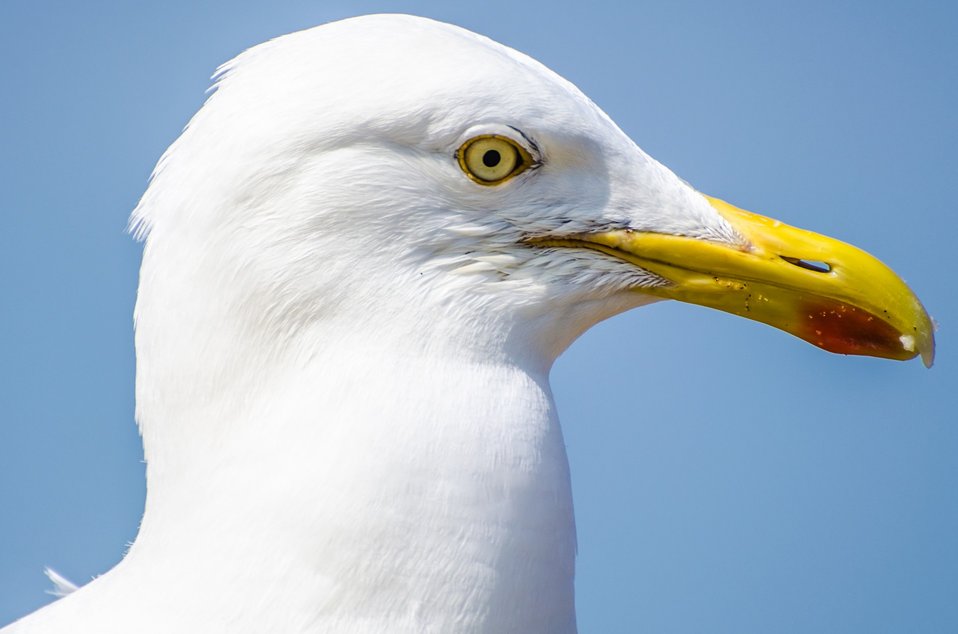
Seagull close-up.